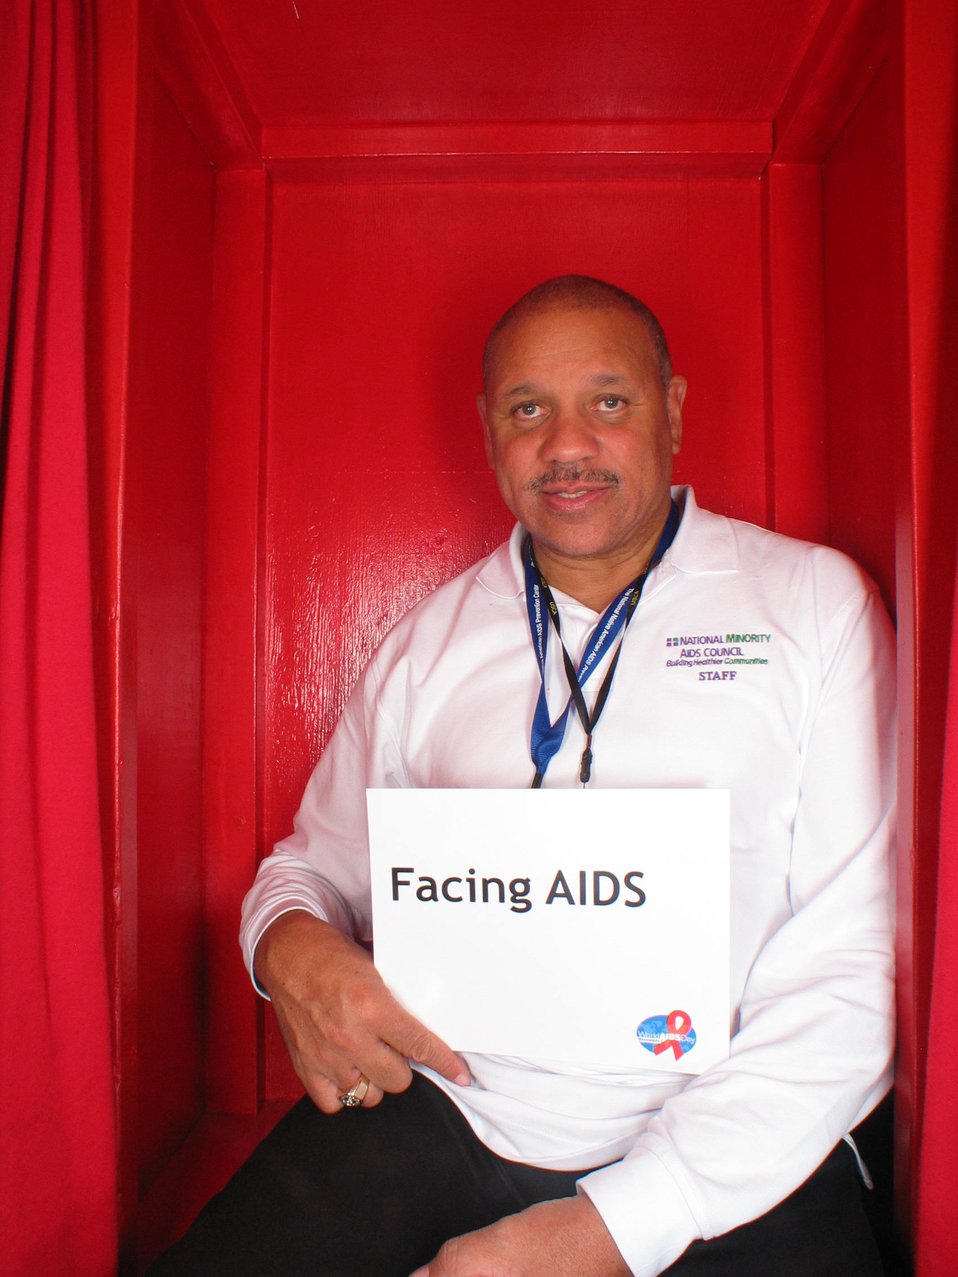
Facing AIDS